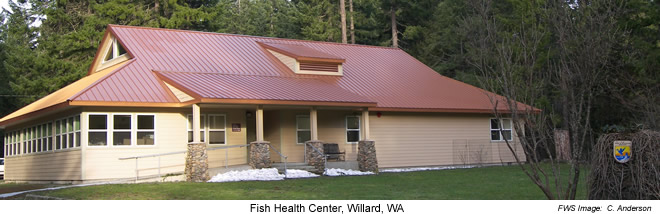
Office building - Lower Columbia River Fish Health Center